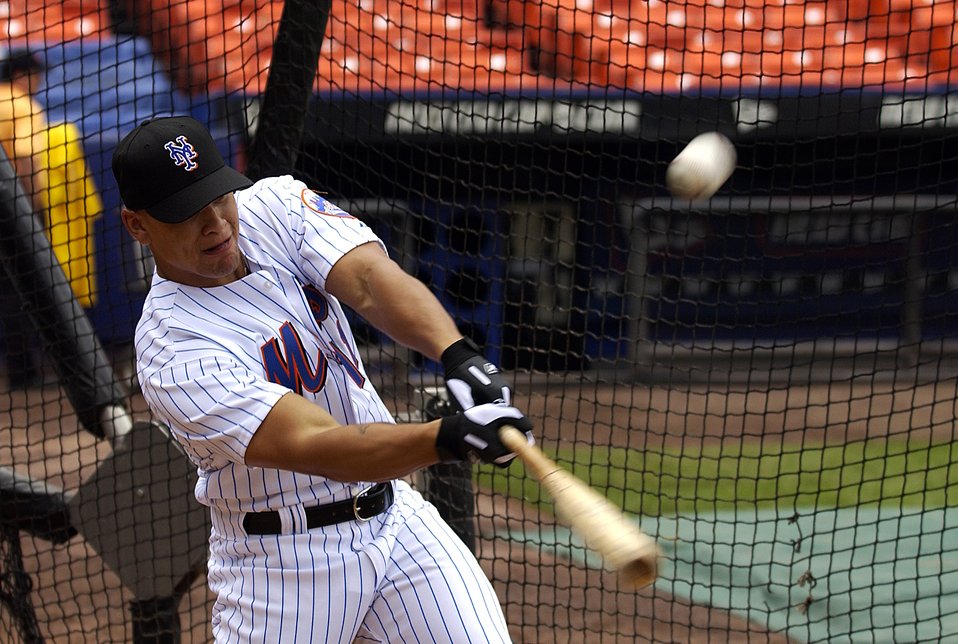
From Airman to Met

NEW YORK -- Senior Airman Chardo Richardson hits a ball in batting practice with the New York Mets on June 22. He was at Shea Stadium for the second part of a job swap with Mets pitcher Al Leiter. The pitcher was a boom operator for a day at McGuire Air Force Base, N.J., on May 24. Airman Richardson is a boom operator with the 32nd Air Refueling Squadron at McGuire.